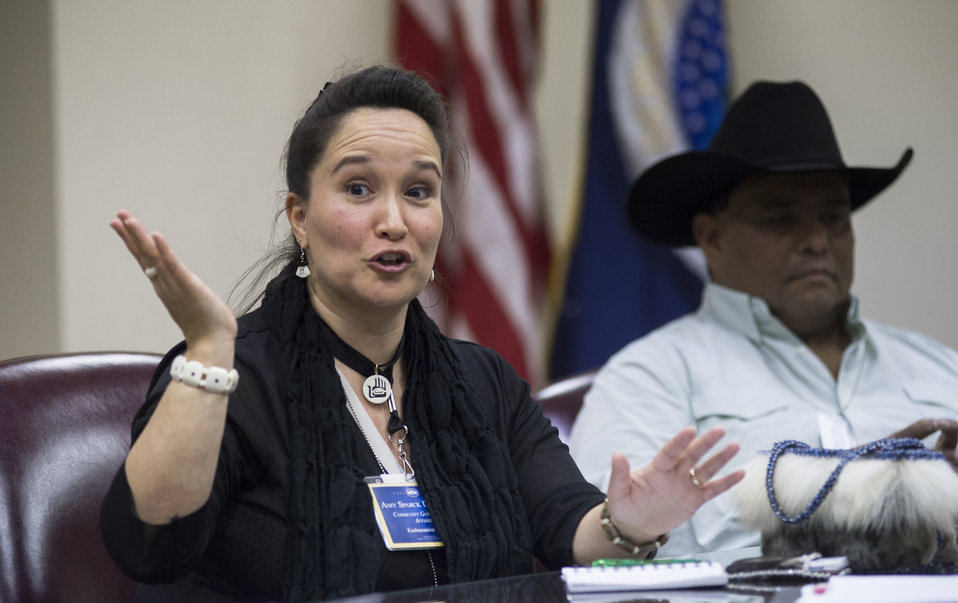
Native American Farmers and Ranchers Chairman Mark Wadsworth (right) listens to North Star Group, D.C. Government and Community Affairs Senior Advisor Amy Sparck Dobmeier (left) speak at the Agriculture, Community and Economic Development Opportunities in Indian Country with Agriculture with tribal leaders at the U.S. Department of Agriculture (USDA) in Washington, D.C. on Tuesday, Nov. 12, 2013.